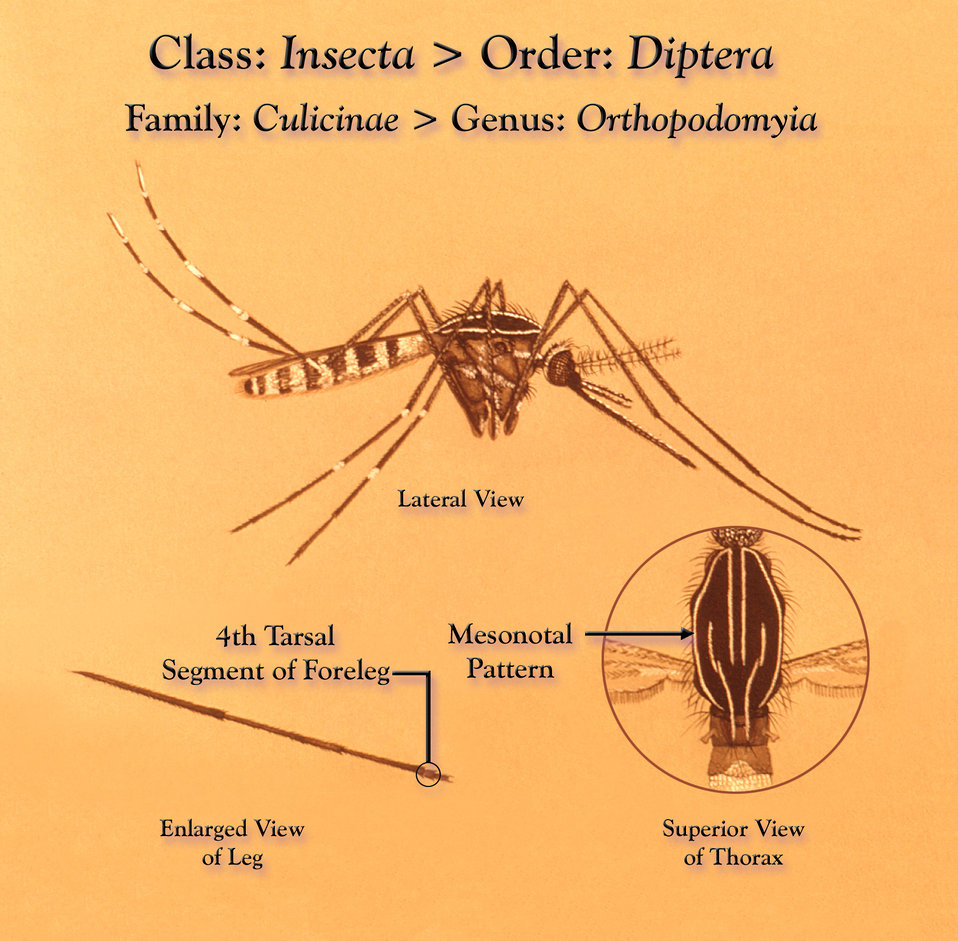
Illustration of a mosquito

This illustration depicts an Orthopodomyia sp. mosquito from a lateral view, as well as two insets; an enlarged view of its foreleg (Lt), and a superior view of the insect's thoracic region revealing the linear details of its mesonotal pattern.